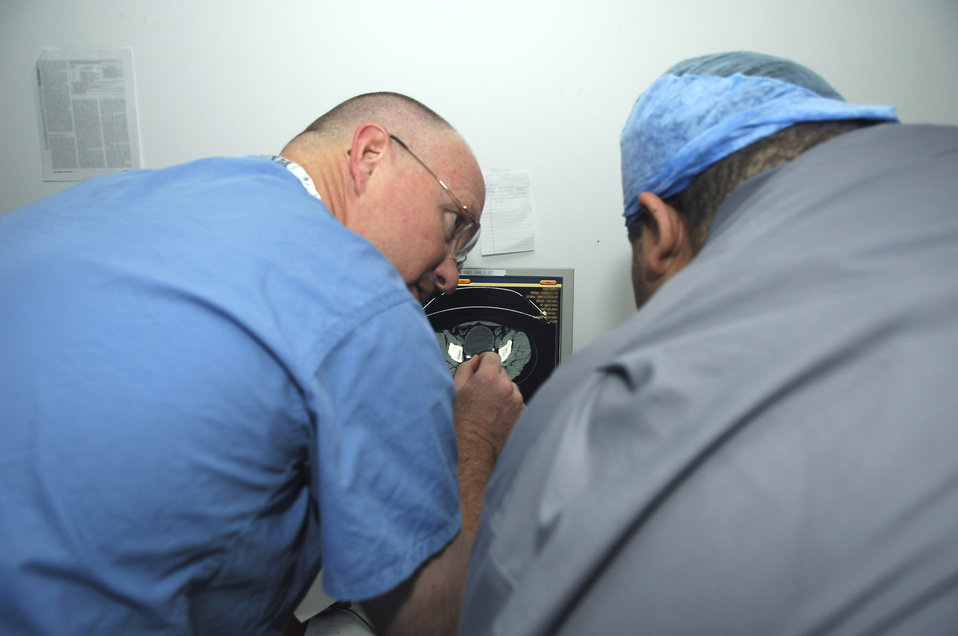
Balad trauma doctors gather to hone skills

Lt. Col. (Dr.) John Mansfield discusses a patient's CT scan with an Iraqi surgeon from Balad General Hospital before going into the operating room March 26 at Balad Air Base, Iraq. The Iraqi doctor visited the Air Force Theater Hospital in conjunction with the Joint Theater Trauma System conference held here March 24 and 25 to increase the interoperability of armed forces medical treatment facilities as well as civilian hospitals in theater. Colonel Mansfield a 332nd Expeditionary Medical Operations Squadron urologist is deployed from Royal Air Force Lakenheath, England.